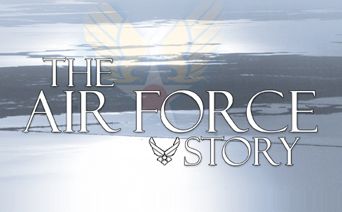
The Air Force Story online

Air Force Story Online